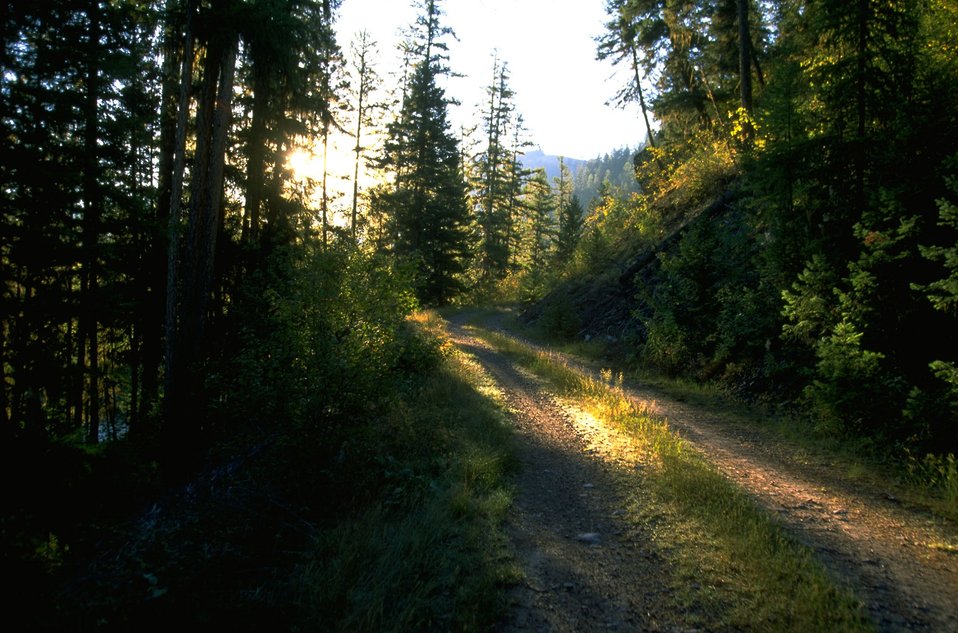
Road to the Buffalo non-motorized trail along the Blackfoot River